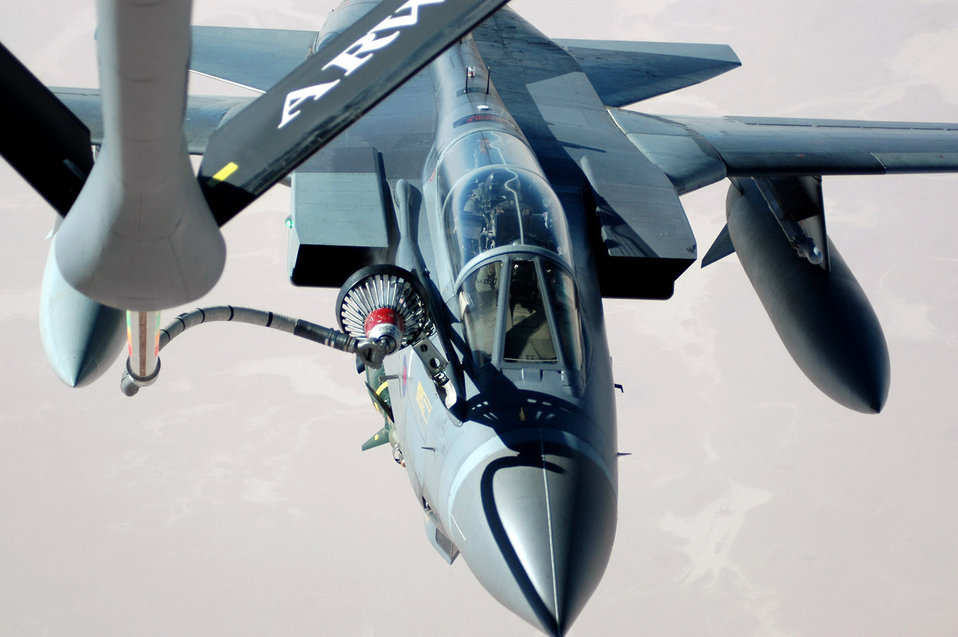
Air Power summary for May 7, 2007

A British Royal Air Force GR4 Tornado takes on fuel May 8 from a KC-135 Stratotanker from the 379th Air Expeditionary Wing during an Operation Iraqi Freedom mission. KC-135 aircrews from the 340th Expeditionary Air Refueling Squadron offload about 1 million pounds of fuel each day to a variety of Air Force, Navy and coalition aircraft. Aerial refueling allows bomber, fighter and intelligence, surveillance and reconnaissance aircraft to maintain a persistent presence over the battlefield.